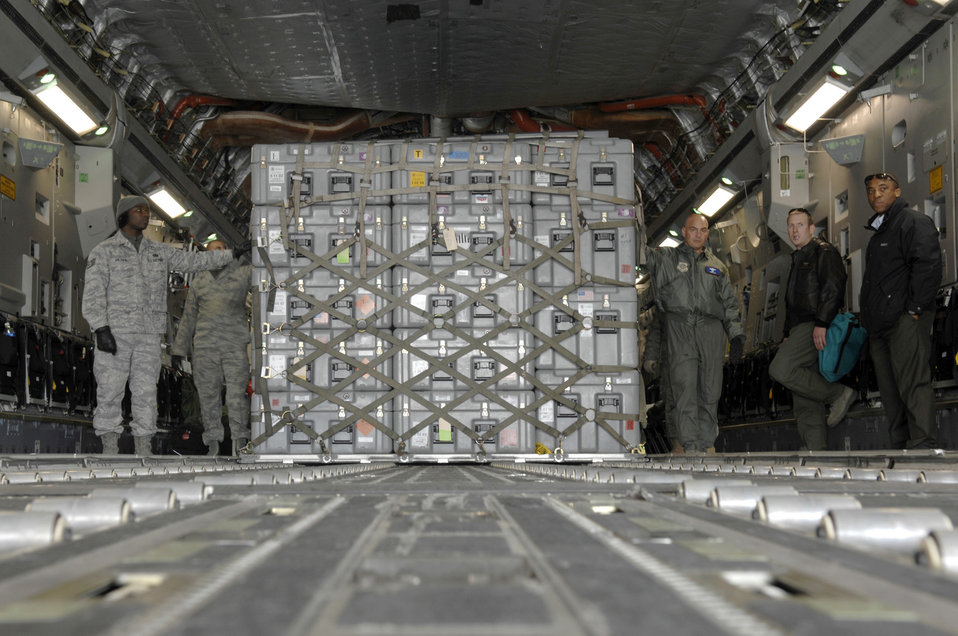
Emergency Response for Japan's Earthquake disaster

U.S. Air Force personnel offload pallets from a Los Angeles Search and Rescue team at Misowa Air Force Base, Japan during an emergency response on March 13, 2011. Aircrew from the 4th Airlift Squadron, McChord AFB, Wash. are transporting members and equipment for Los Angeles Search and Rescue team to Japan to aid in recovery and care of victims of the recent earthquake.